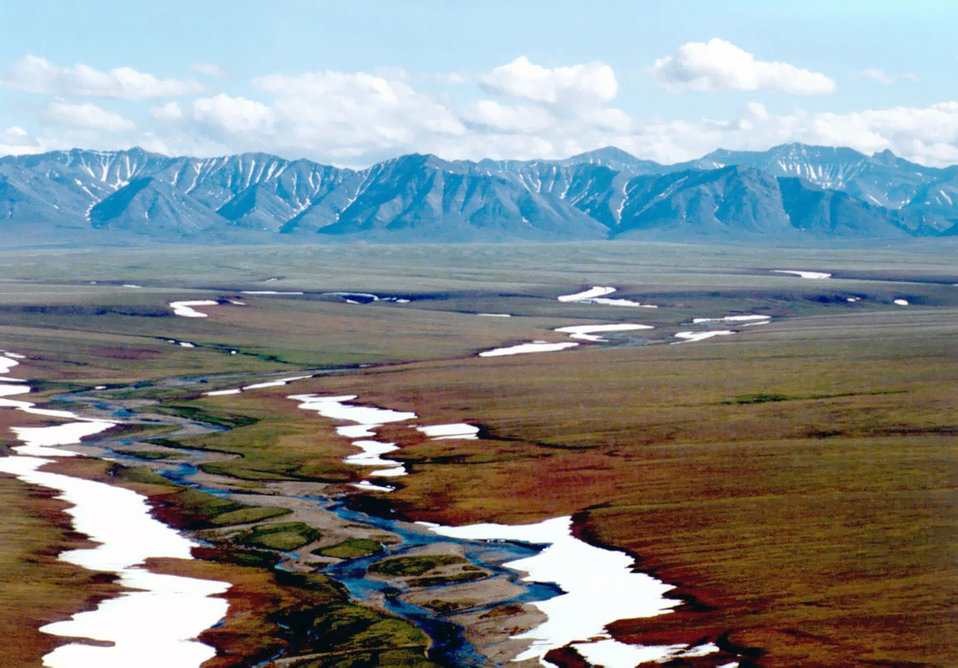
1002 Area: Brooks Range Mountains

1002 Area of the Arctic National Wildlife Refuge coastal plain, looking south toward the Brooks Range mountains.